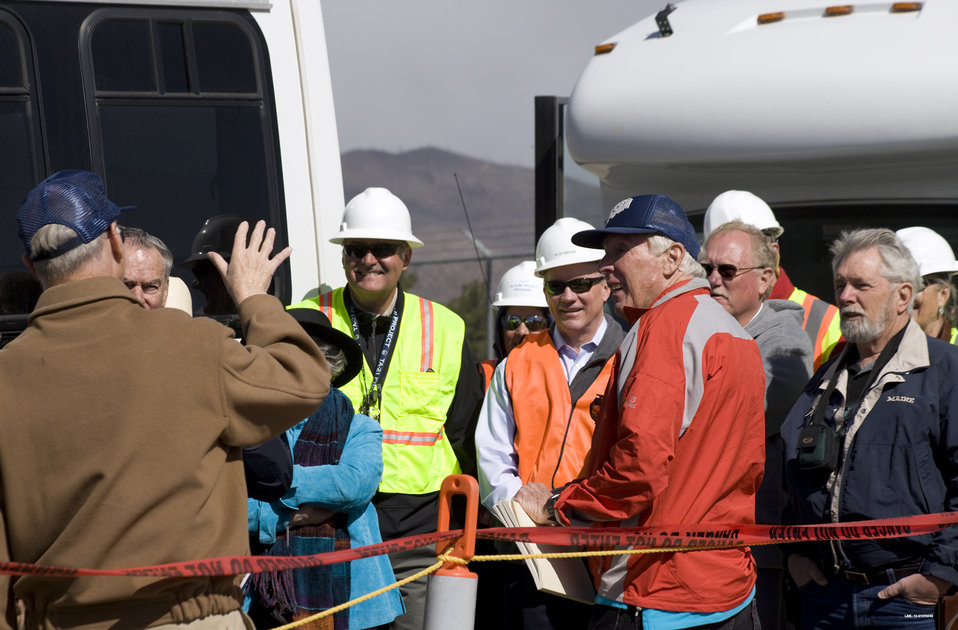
Tritium Systems Test Assembly commemoration ceremony

More than 20 people who worked in the Tritium Systems Test Assembly (TSTA) facility gathered May 10 for a commemoration ceremony prior to demolition of the building.